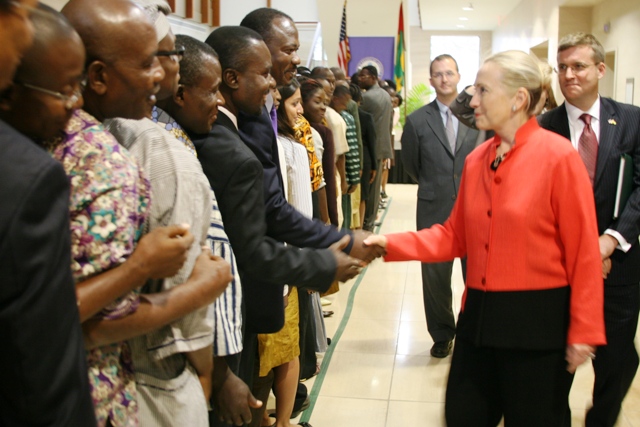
Secretary Clinton Meets With Staff and Families of Embassy Lome

U.S. Secretary of State Hillary Rodham Clinton meets with the staff and families of U.S. Embassy Lome in Lome, Togo, on January 17, 2012.